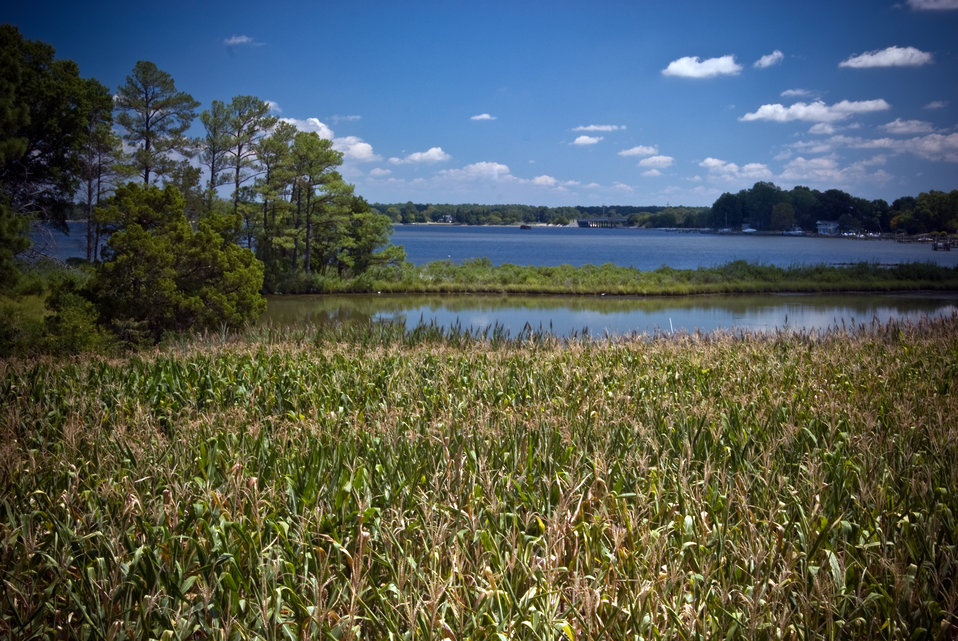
The U.S. Department of Agriculture (USDA) Natural Resource Conservation Service (NRCS) works with local farmers as part of the Chesapeake Bay Watershed Initiative (CBWI). CBWI is voluntarily program that farmers, ranchers and forestland owners install conservation practices on hundreds of thousands of acres annually to help support rural economies, protect wildlife habitat and improve water quality in the Chesapeake Bay Watershed in Talbot County, Maryland on August 12, 2008.